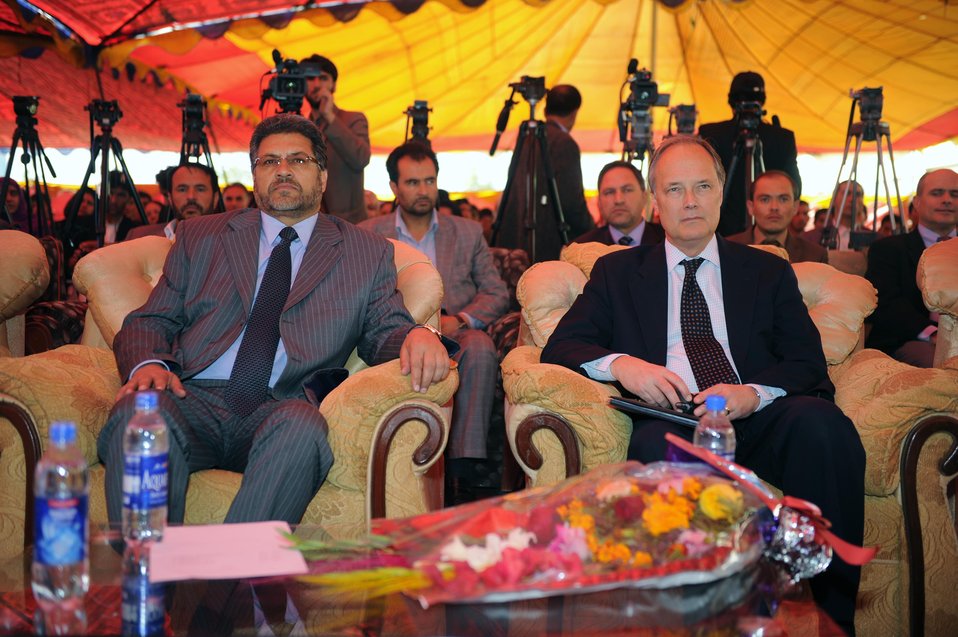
U.S. Deputy Ambassador James B. Cunningham sits with Afghan Minister of Education Abdul Rahim Wardak during the inauguration of the Ghazi School in Kabul.

U.S. Deputy Ambassador to Afghanistan James B. Cunningham, Afghan Minister of Education Abdul Rahim Wardak and visitng former U.S. Ambassador to Afghanistan Zalmai Khalilzad officially inaugurated the newly rebuilt Ghazi High School in West Kabul October 23, 2011. Former alumni of the school include both Ambassador Khalilzad and Afghan President Hamid Karzai. The school was destroyed during 30 years of fighting in Afghanistan, and was refurbished by the U.S. Agency for International Development. (Department of State)